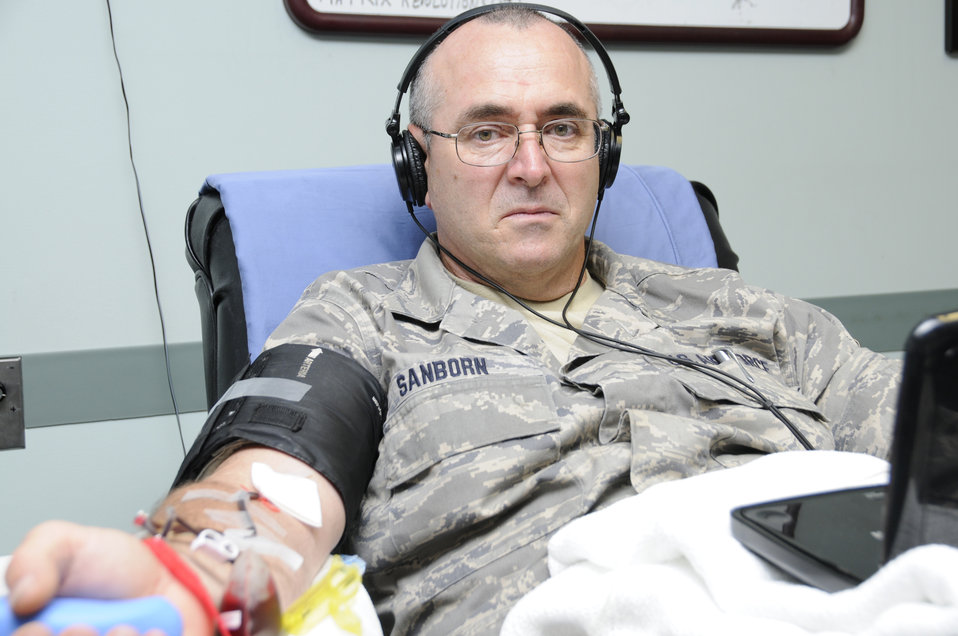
VTANG Airman donates platelets

Senior Master Sgt. Craig Sanborn squeezes a stress ball to get the blood flowing at the American Red Cross Center in Burlington, Vt., July 18, 2012. A single donation of blood platelets can give up to three therapeutic doses to patients.